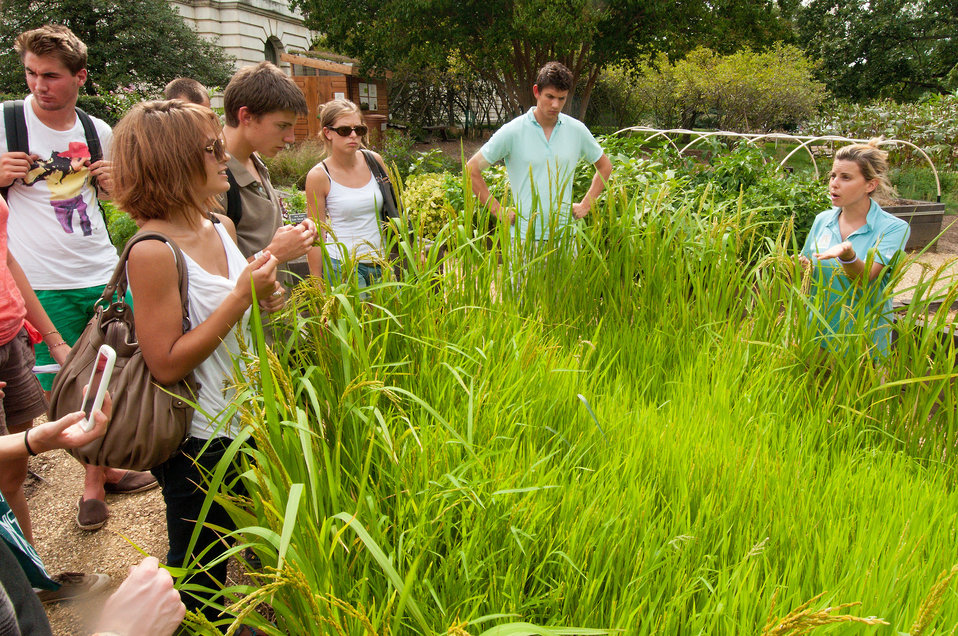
USDA People’s Garden, Outreach and Education Coordinator Annie Ceccarini (blue shirt), shares the success the United States Department of Agriculture People’s Garden has had growing Carolina Golden Rice to French students from Ecole Du Breuil, School of Horticulture and Landscaping Techniques of Paris, France. The students visited the United States Department of Agriculture People’s Garden in Washington, D.C., on Tuesday, September 4, 2012. The students are on a two-week U.S. tour, which includes a visit to the White House Kitchen garden, as well as gardens and parks in Washington, D.C. The students will also visit Temple University in Philadelphia, PA., in addition to parks and gardens in New York City where they will also stay with host families and work on community gardens.